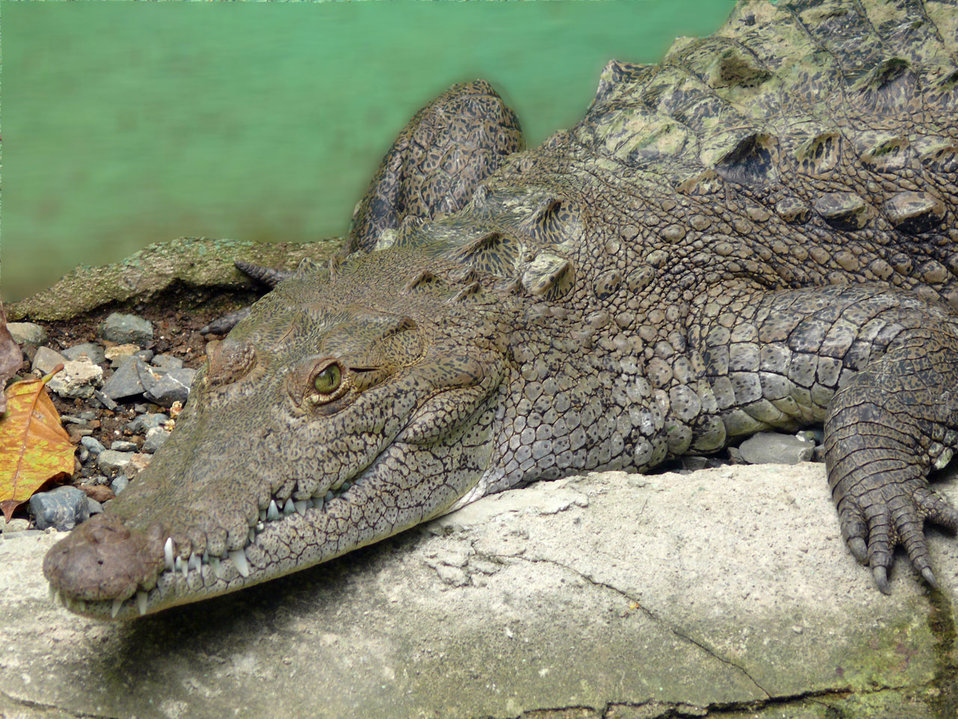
Crocodile in nature environment.